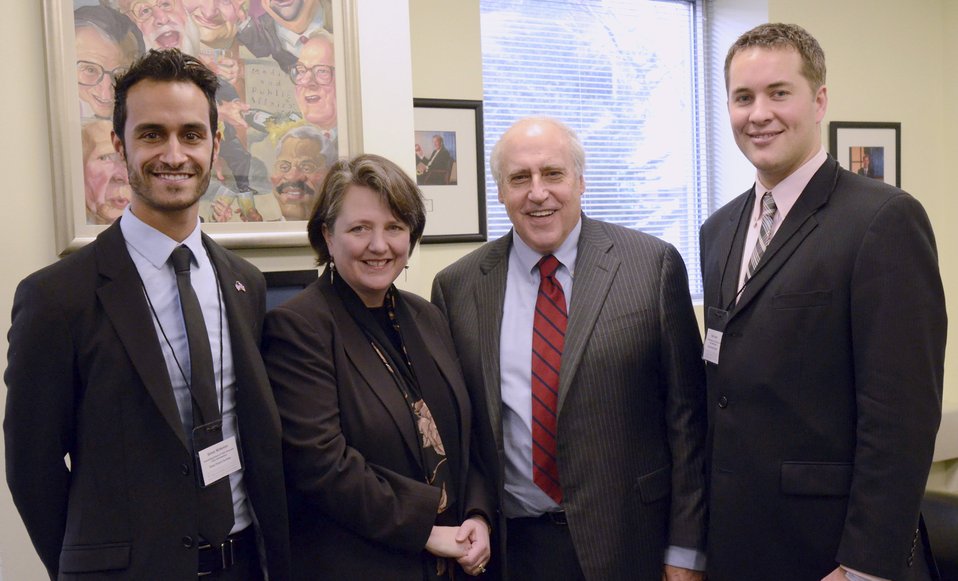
Left to right Simon McNorton Policy Forum Co-Chair, Agriculture Deputy Secretary Dr. Kathleen Merrigan, Former Congressman and Agriculture Secretary Dan Glickman and Kabir Green, Policy Forum Co-Chair in the Green Room at the 'Shaping the Farm Bill for a Sustainable Future.' Forum at The Trachtenberg School of Public Policy and Public Administration, George Washington University in Washington, D.C., on Thursday, March 1, 2012.